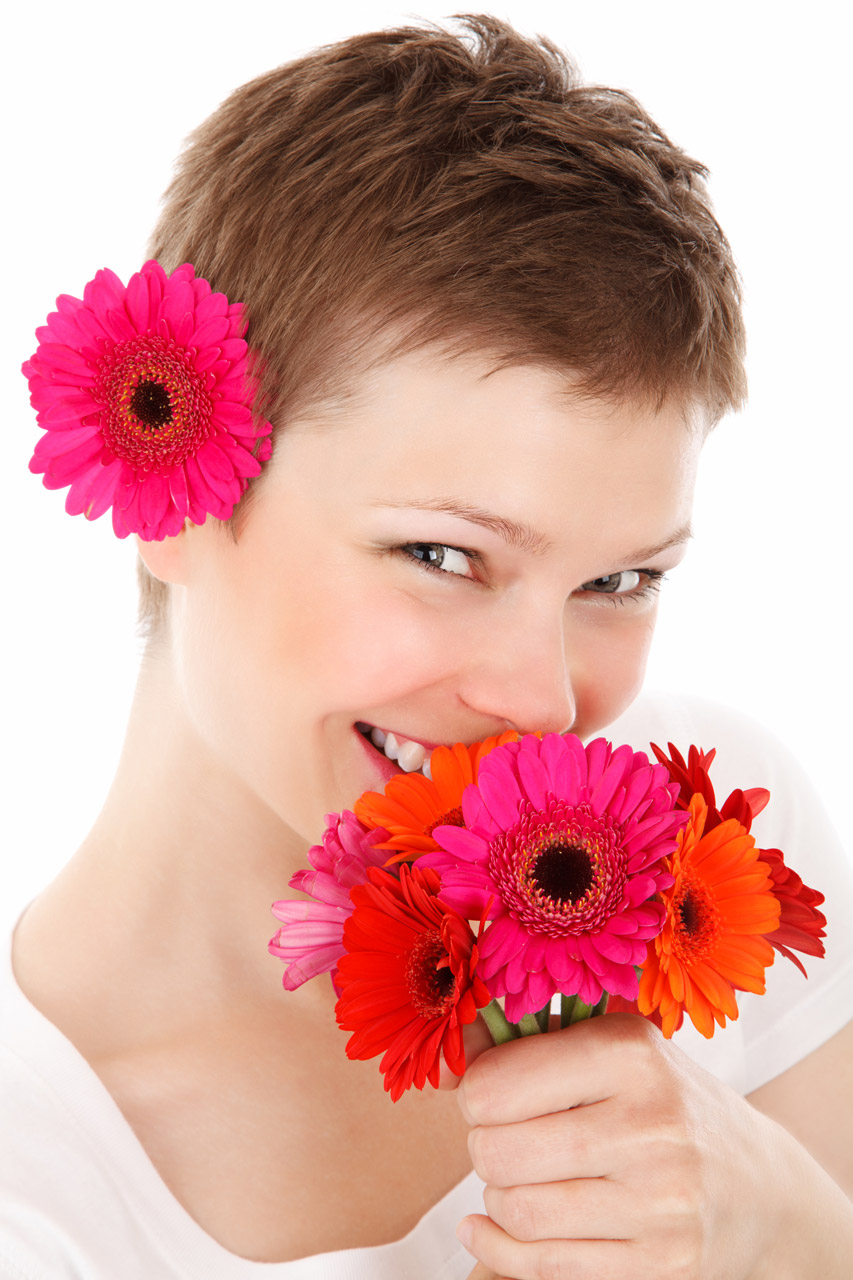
Woman holding flowers

Young woman holding colorful flowers isolated on white background.